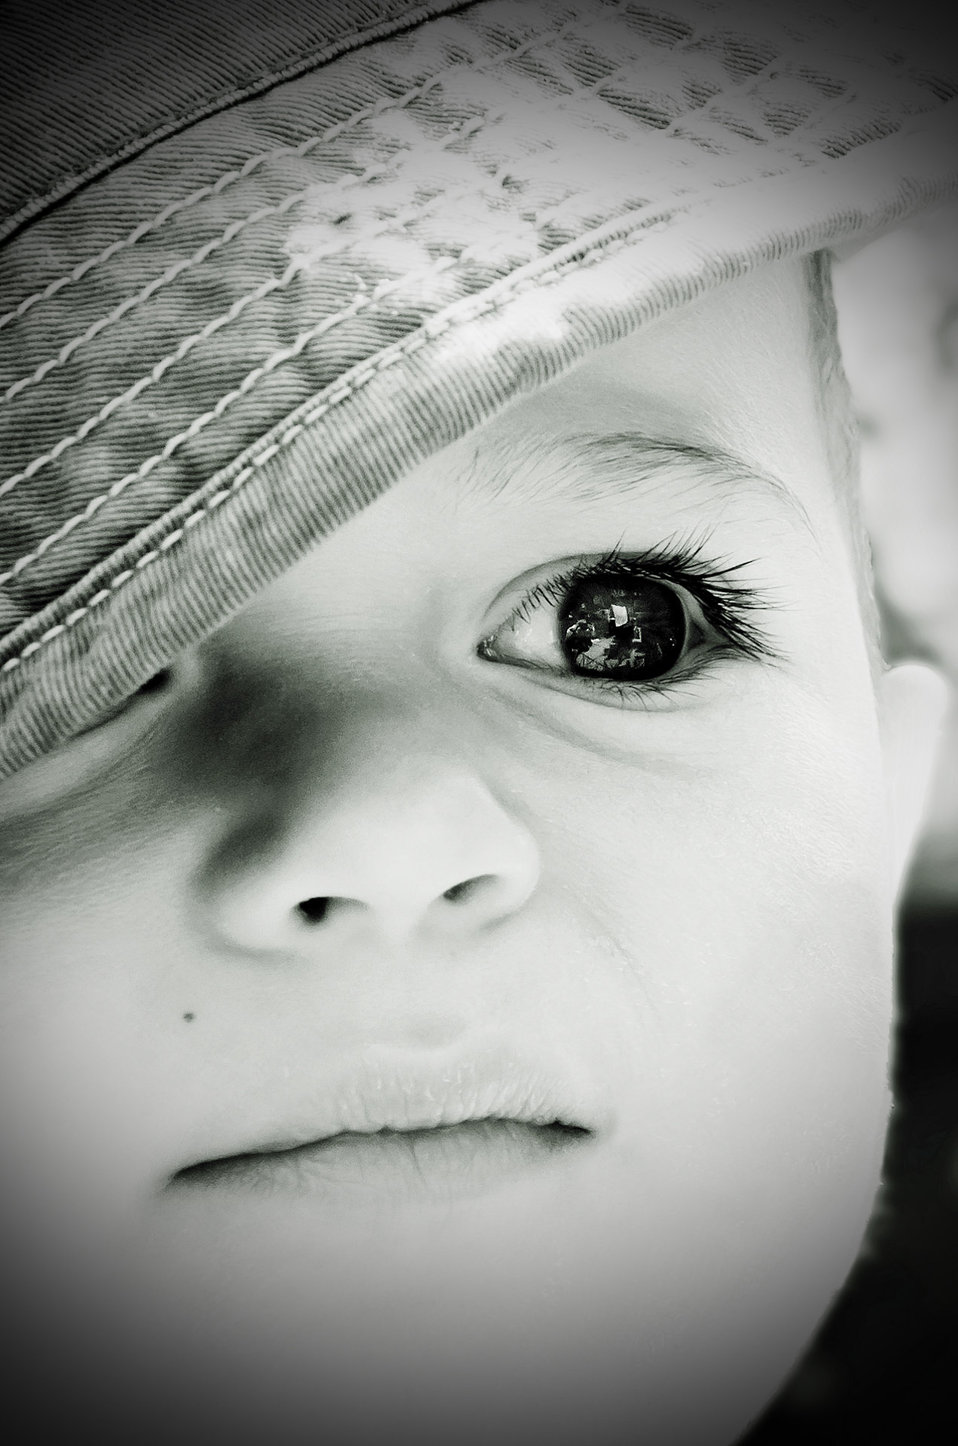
Child - portrait.